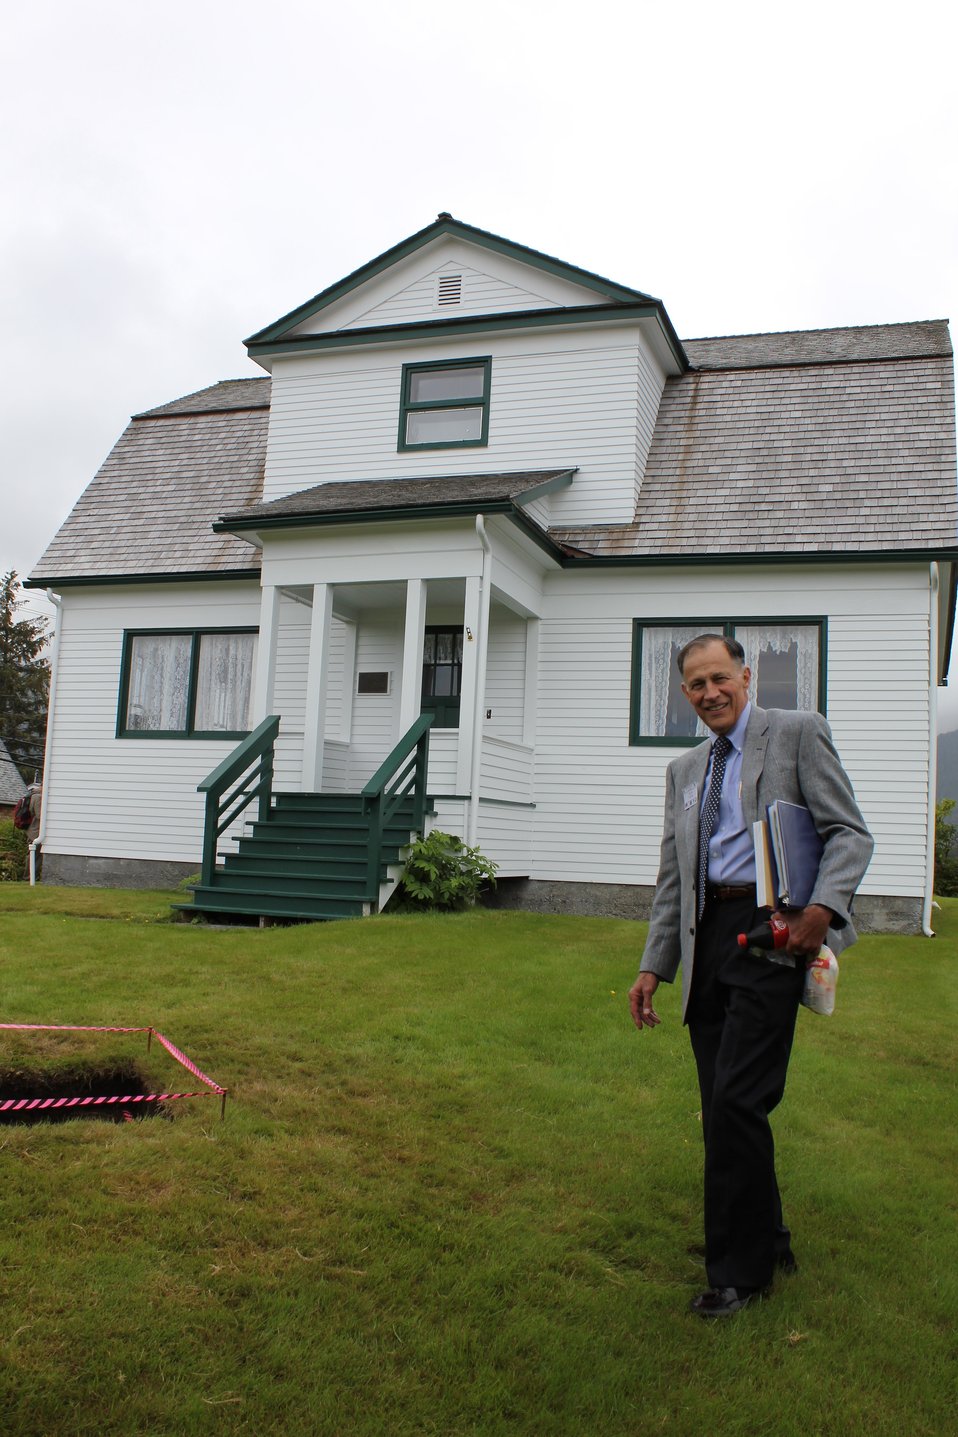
Living quarters of the observer at the Coast and Geodetic Survey Sitka Geophysical Observatory.